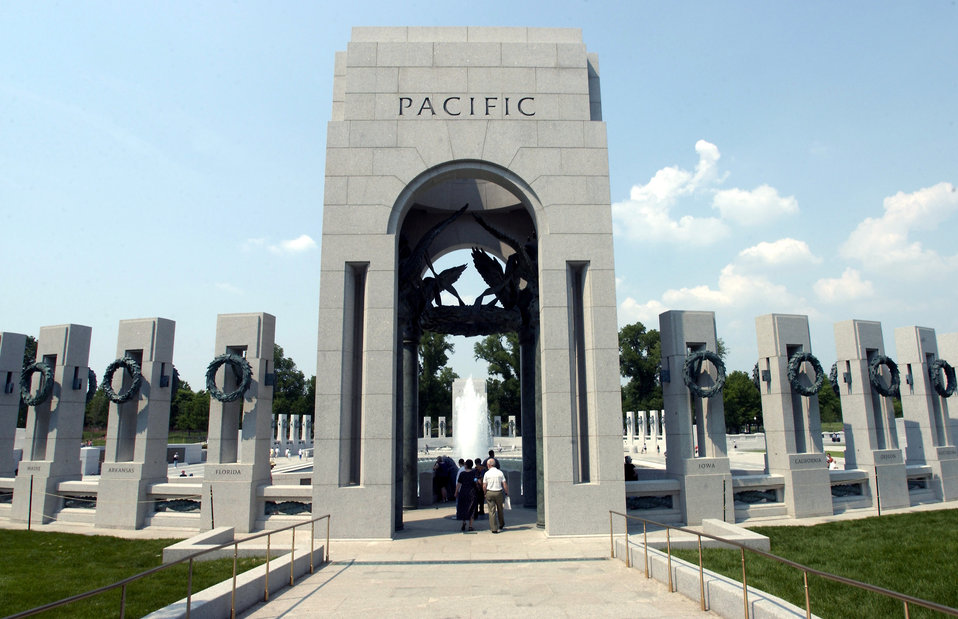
World War II Memorial

WASHINGTON -- Veterans living at the Armed Forces Retirement Home here visited the World War II Memorial on May 11. The memorial is nestled between the Lincoln Memorial and Washington Monument on the National Mall. Congress authorized the memorial in 1993 and construction began in September 2001. It will be officially dedicated Memorial Day weekend.